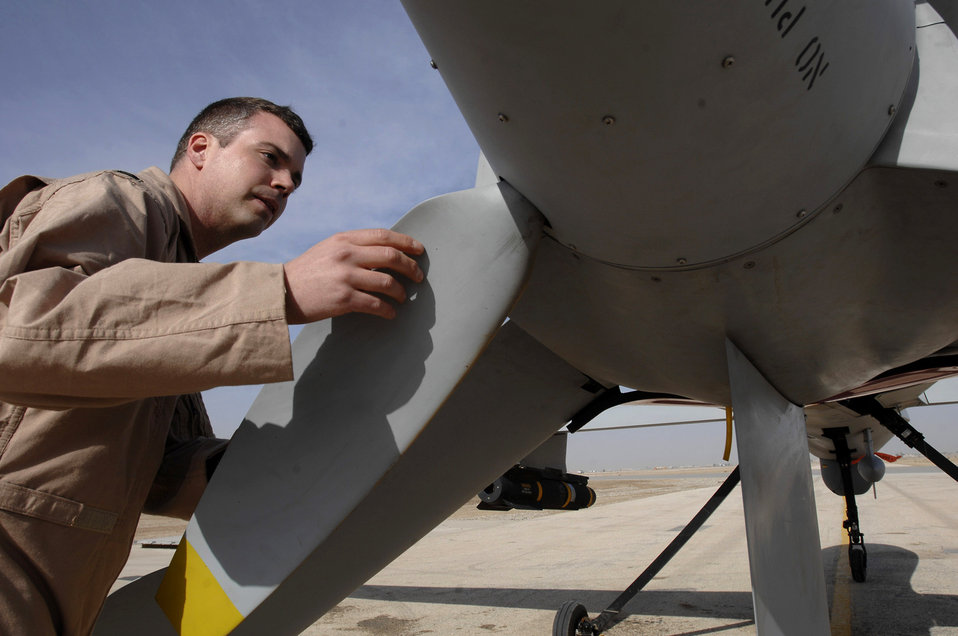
Predator on the move

Capt. Trevor Laribee checks the propeller during his pre-flight inspection on an MQ-1 Predator unmanned aerial vehicle prior to take off Dec. 18 at Ali Base, Iraq. The Predator is a medium-altitude, long-endurance, remotely piloted aircraft capable of conducting armed reconnaissance against critical, perishable targets. Captain Laribee is assigned to the 361st Expeditionary Reconnaissance Squadron and is deployed from Creech Air Force Base, Nev.